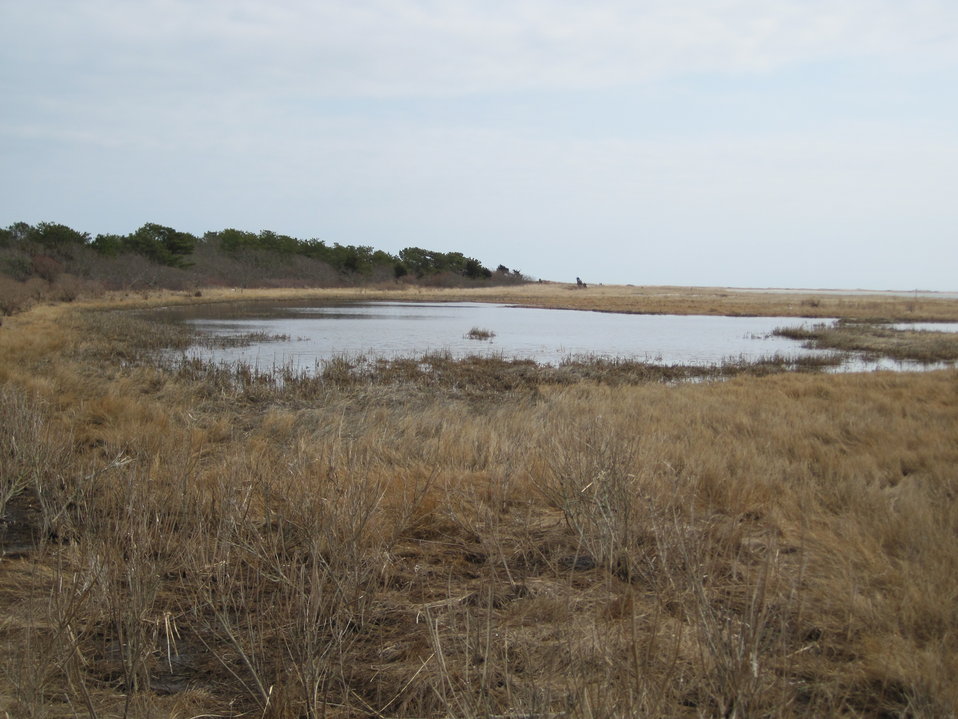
Monomoy National Wildlife Refuge

Wetlands along the Morris Island Trail.

Credit: Keith Shannon/USFWS

Monomoy National Wildlife Refuge is part of the Eastern Massachusetts National Wildlife Refuge Complex.